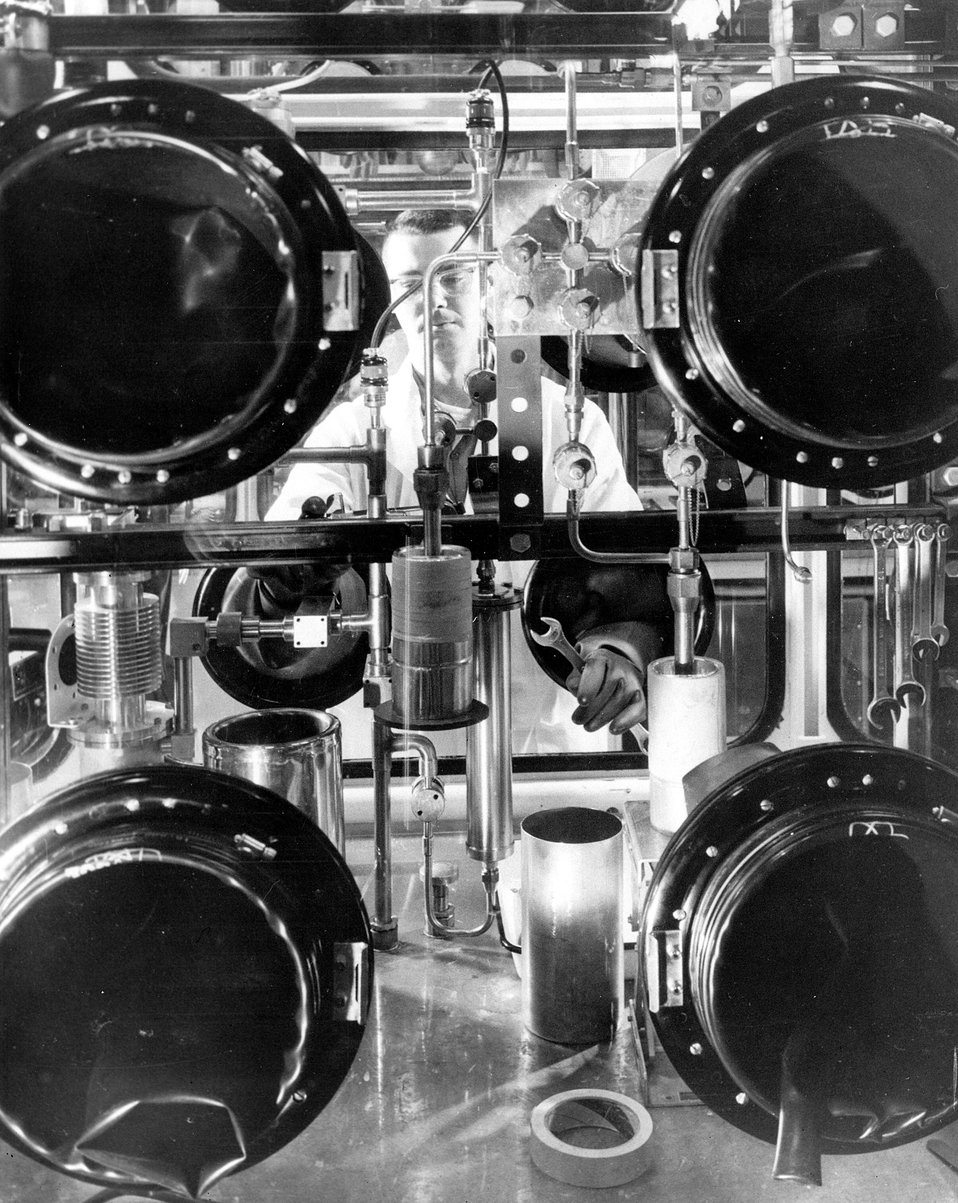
Scientists at Argonne found that the release of plutonium hexafluoride gas into a moist glovebox atmosphere results in a rapid reaction--producing plutonyl fluoride, a solid that is effectively removed by AEC-type filters.
c.1966